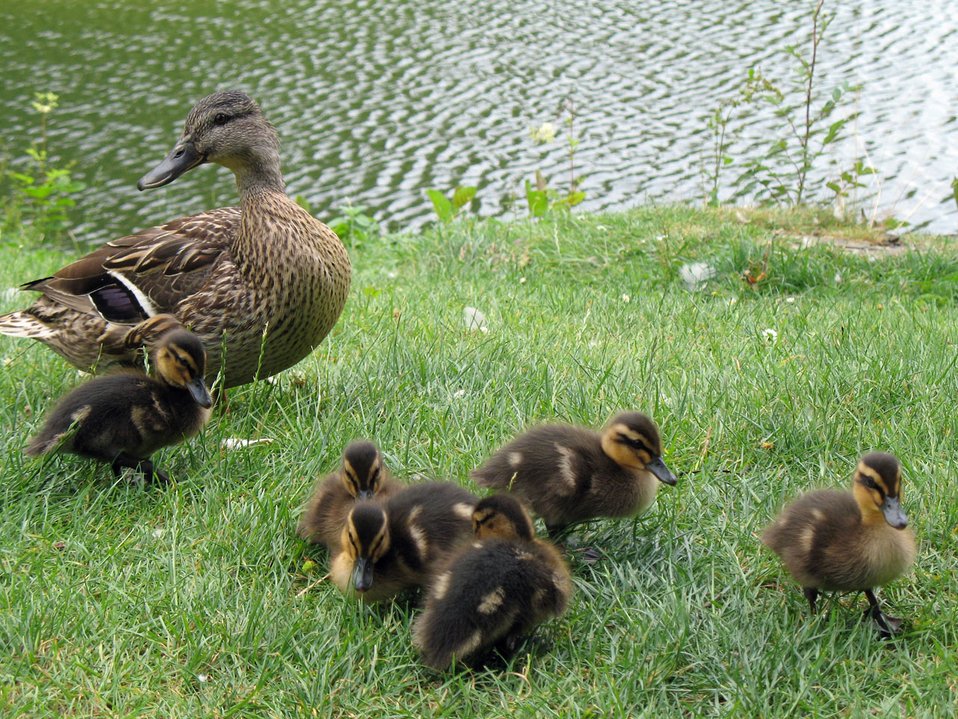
Duck with ducklings

A duck with ducklings on the bank.